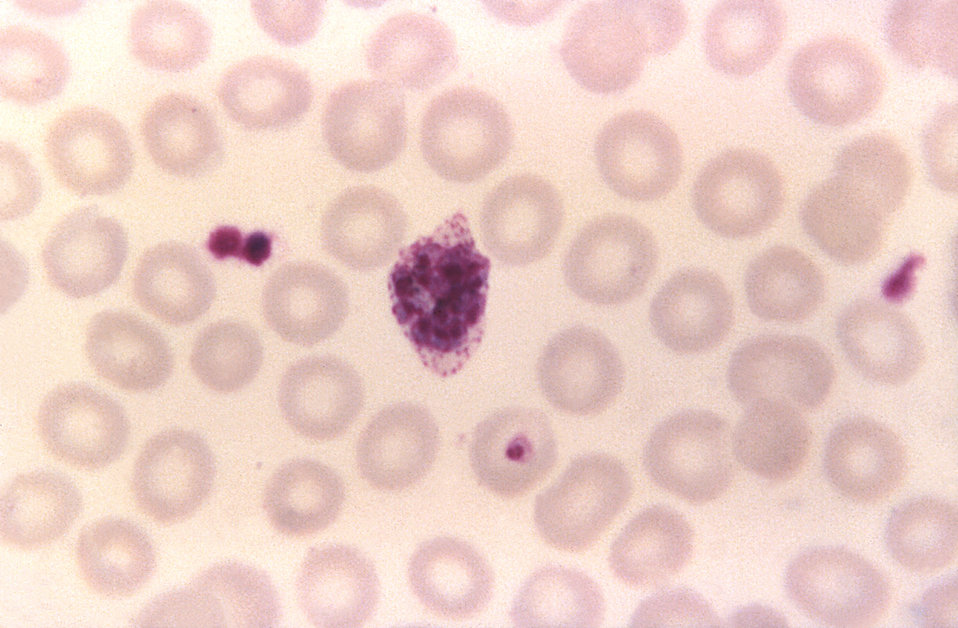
This thin film Giemsa stained micrograph reveals a mature Plasmodium ovale trophozoite.